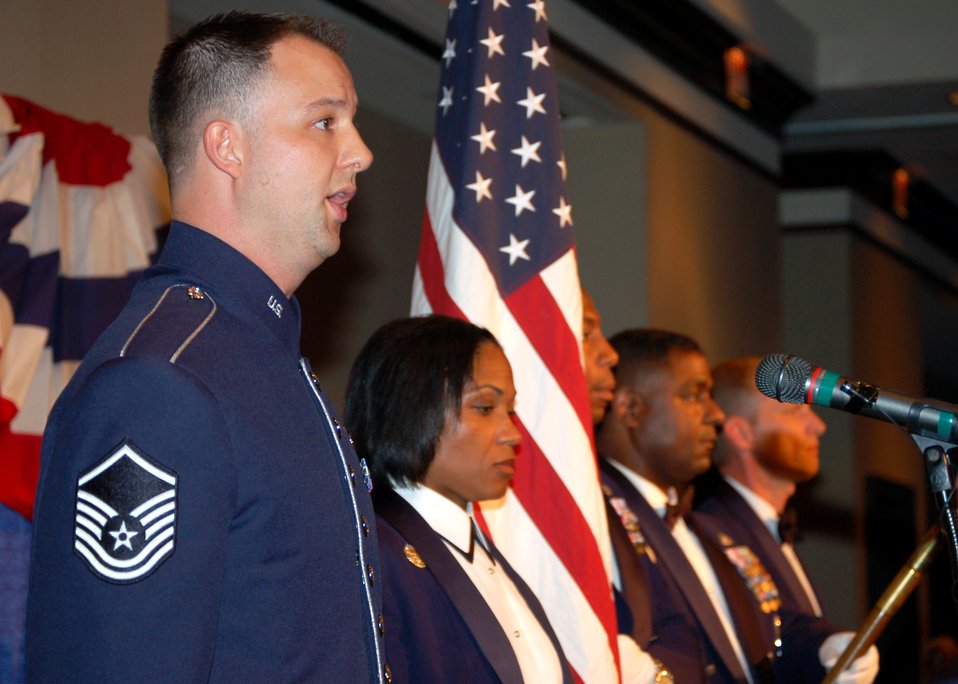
Airmen recognize impact of enlisted heritage

Master Sgt. Bradley Bennett sings the national anthem as the honor guard stood nearby presenting the colors during the Senior Enlisted Leaders Conference Heritage Dinner July 26 in Montgomery, Ala. Sergeant Bennett is assigned to the Air Force Ceremonial Band, and holds the distinction of being the first Air Force member to sing the national anthem for a presidential inauguration. The event was a celebration of the Air Force's 60th Anniversary and the 40th Anniversary of the inception of the Office of the Chief Master Sergeant of the Air Force.